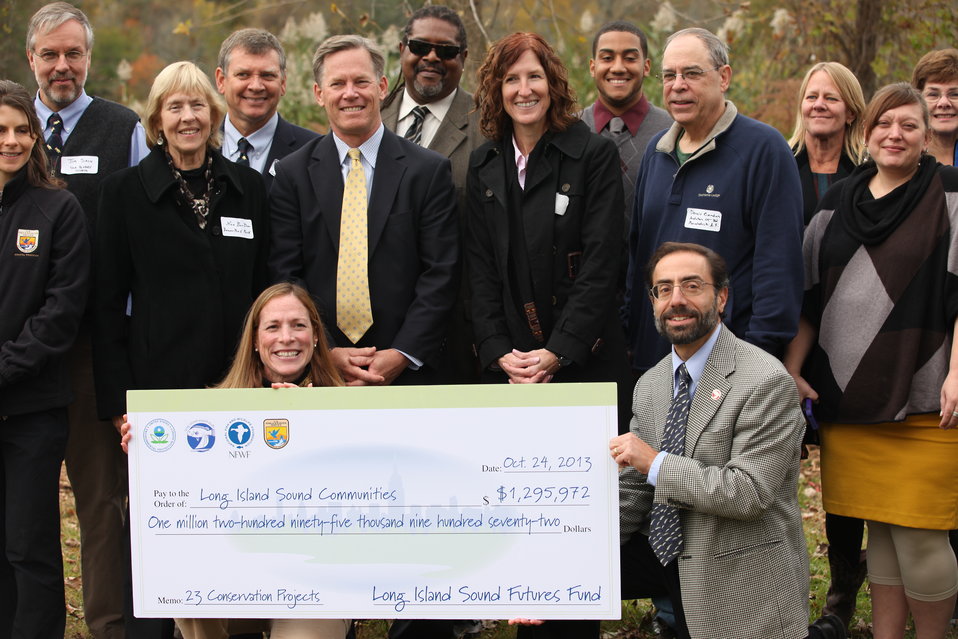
Funding for the partnership

The partnership received one of 33 education and outreach grants awarded by the Long Island Sound Futures Fund this year.